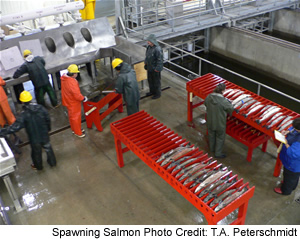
Spawning Salmon - Makah National Fish Hatchery

Makah National Fish Hatchery staff spawn salmon at their facilities.